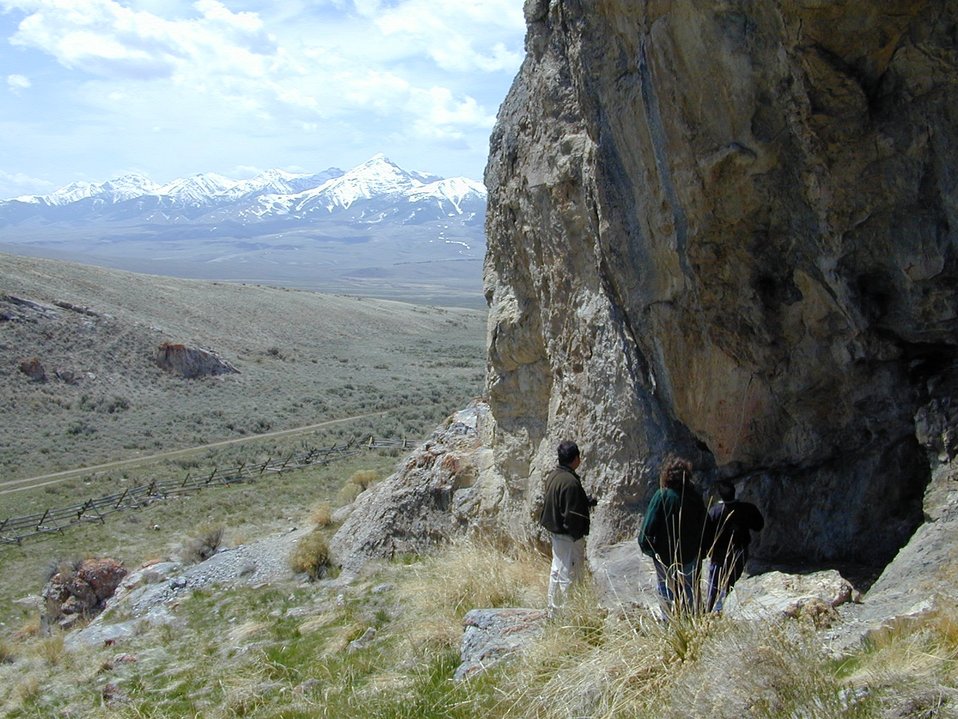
Birch Creek Valley